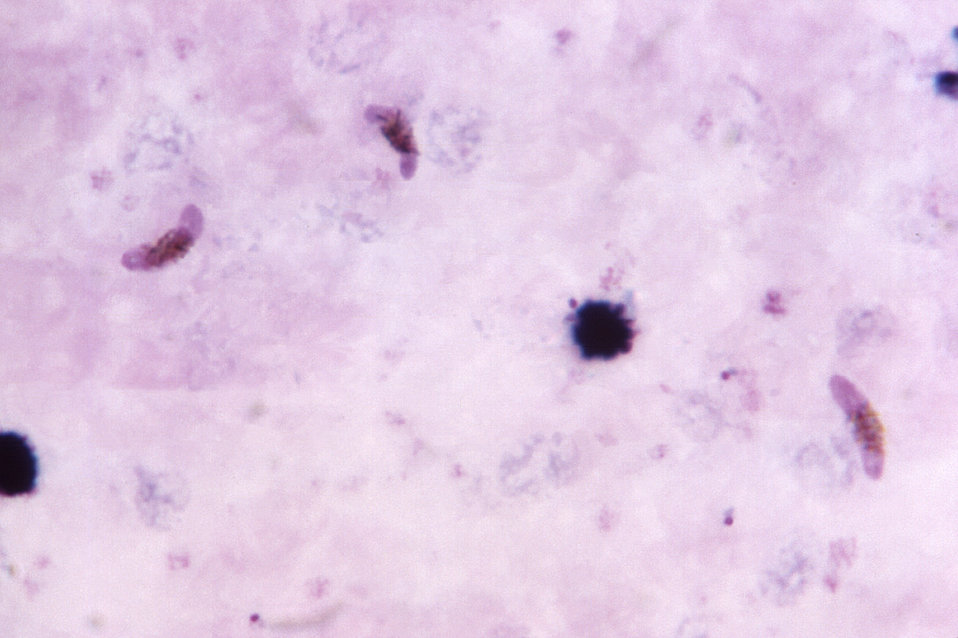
This thick film blood smear micrograph depicts three pinkish-colored, crescent-shaped Plasmodium falciparum gametocytes.